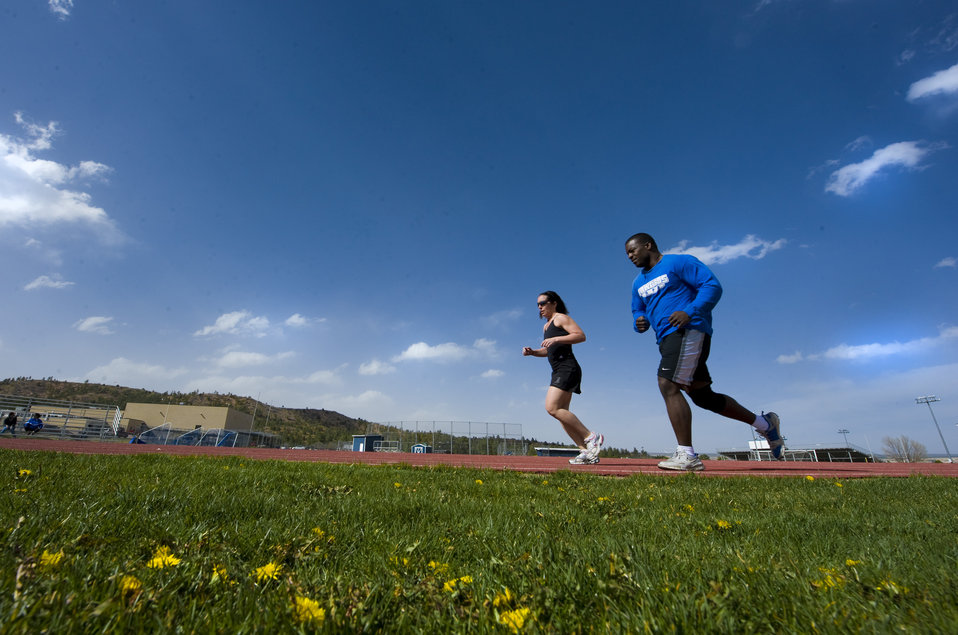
Warrior Games

Air Force athlete Matt Sanders warms up with his track coach by jogging around the track before starting an intense workout to prepare for the Warrior Games May 9, 2011, at the Air Force Academy. The Warrior Games help elevate abilities through athletic competition for wounded, ill, and injured service members by providing a focal event to empower the incorporation of athletics into military wounded warrior programs, the games run through May 16 – May 21.